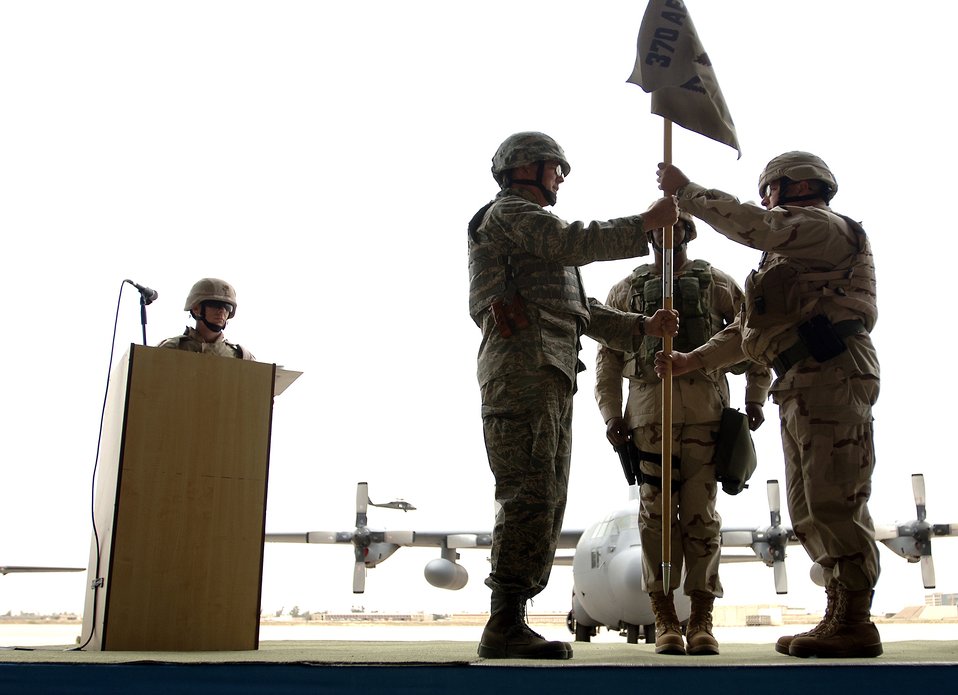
Operation Iraqi Freedom

Baghdad, Iraq -- Brig. Gen. Robert Allardice presents Col. Daniel G. Groeschen with the new 370th Air Expeditionary Advisory Group flag during the Unit Activation and Assumption of Command Ceremony on New Al Muthana Air Base April 22.